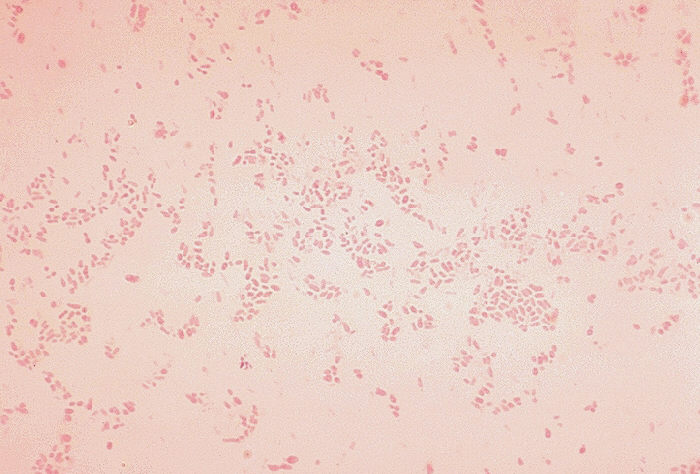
Agrobacterium radiobacter. Gram stain.